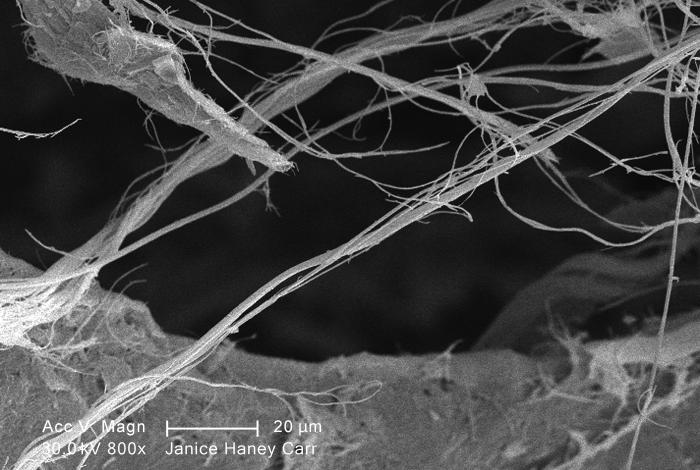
Under a moderate magnification of 800X, this scanning electron micrograph (SEM) revealed some of the microcrystalline ultrastructure exhibited by a piece of raw chrysotile, or white asbestos, which had been excavated from the Lowell Asbestos Mine on Belvidere Mountain, Vermont.